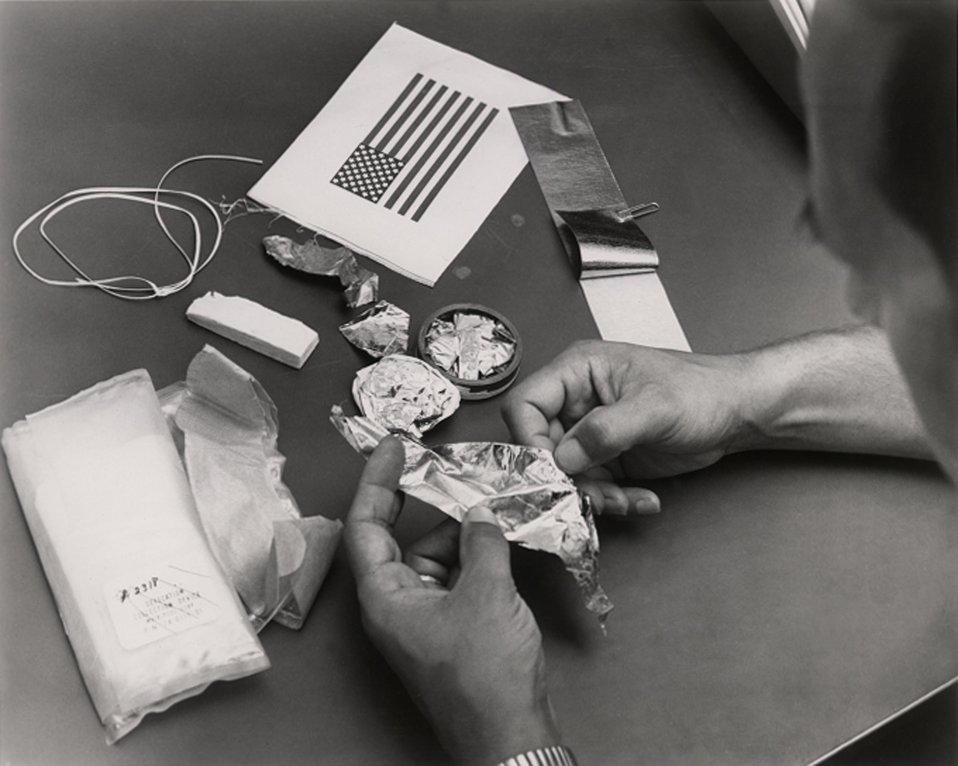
A portion of a reflector shield from Apollo 10 was checked by highly sensitive PNL counting equipment to determine the amount of radiation encountered in space.